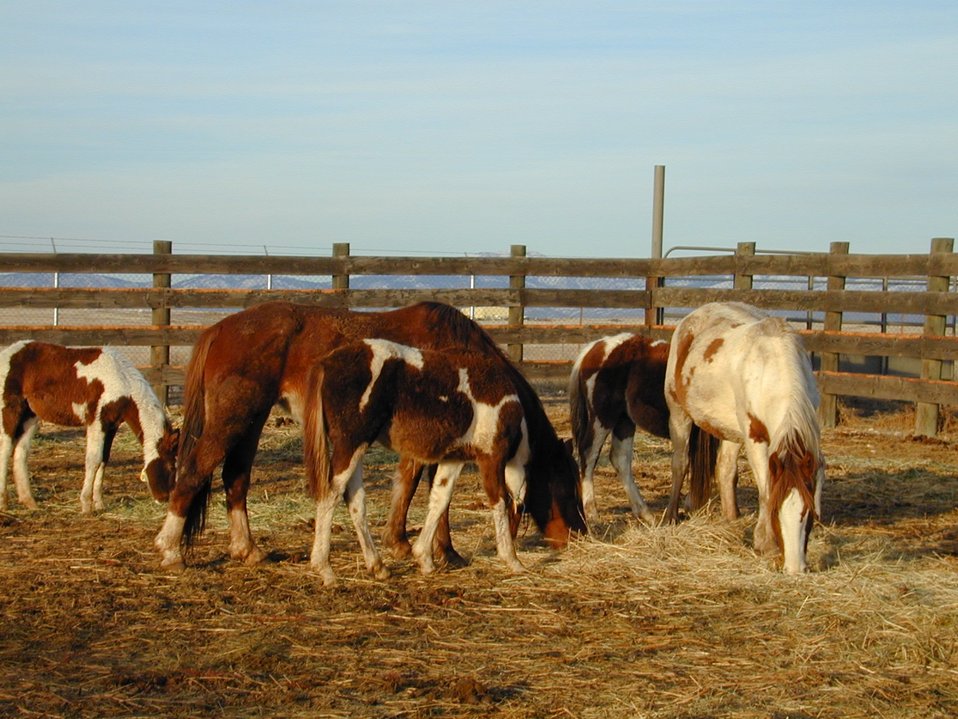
Wild Horse and Burro Adoption